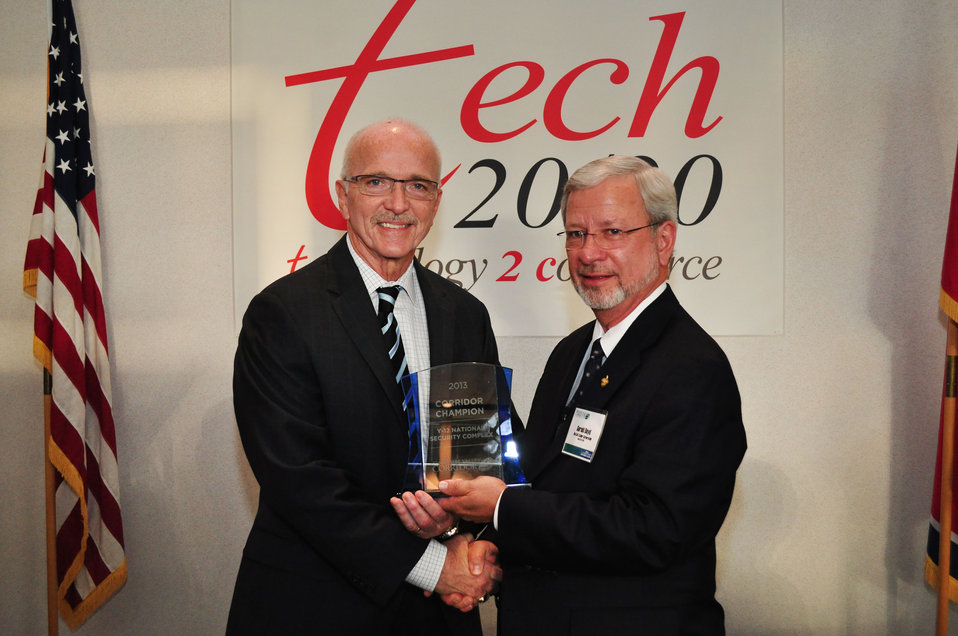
Tennessee Valley Corridor Summit Oak Ridge

13-062 DOE photo Lynn Freeny 5-29-2013 Oak Ridge Tennessee